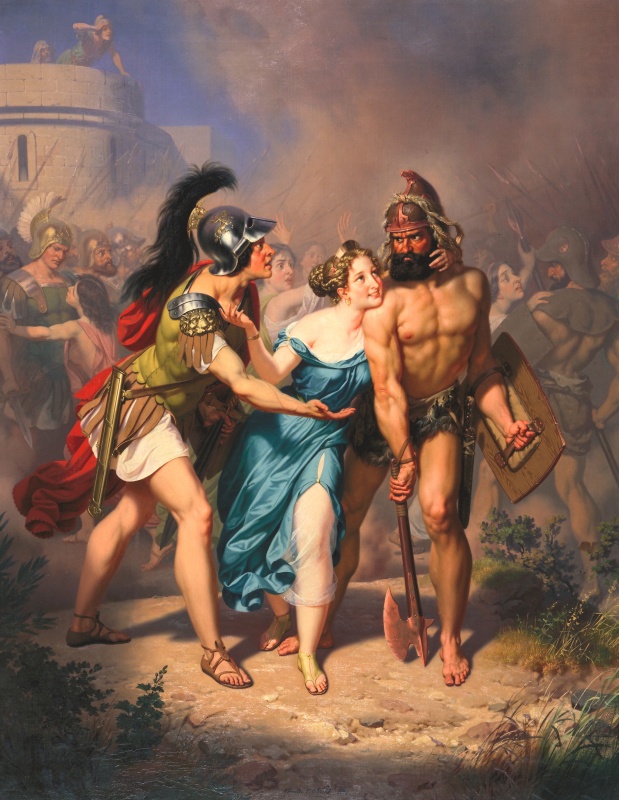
Charles Christian Nahl 1871, The Rape Of The Sabines - The Invasion